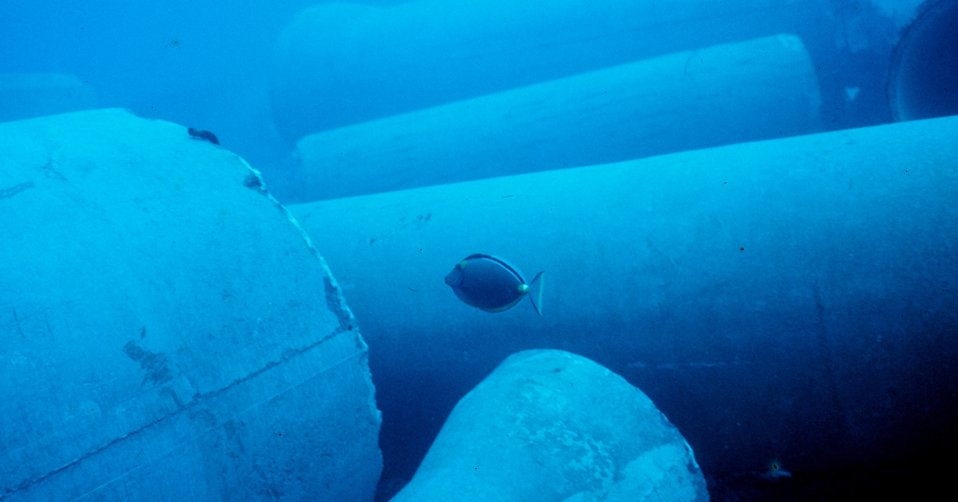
Surgeonfish - Acanthurus dussumieri - known as palani locally. This fish is swimming near new pipe artificial reef with no growth. Among first to discover new artificial reef.